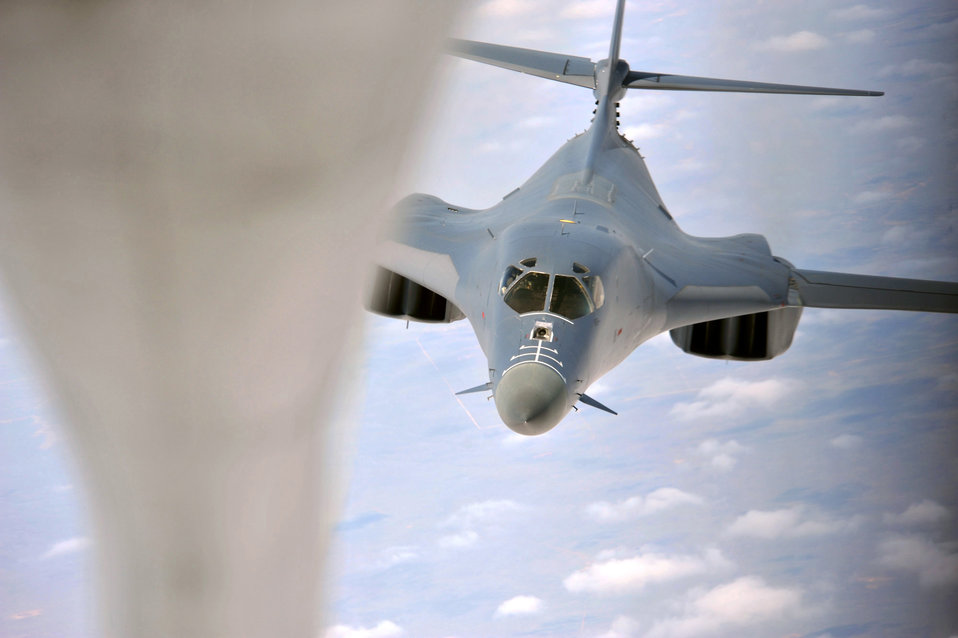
KC-135 Stratotanker refueling mission

A B-1 Lancer prepares to receive fuel from a KC-135 Stratotanker above Northern New Mexico April 21, 2010. The B-1 is assigned to Dyess Air Force Base, Texas, and the KC-135 is assigned to McConnell AFB, Kan.